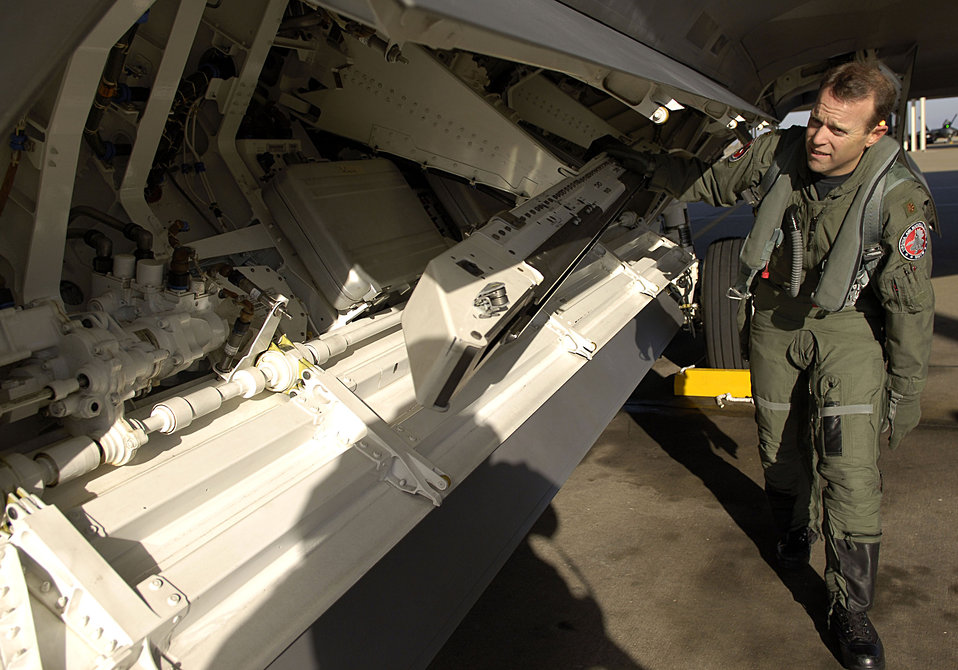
Raptors head to Red Flag

Maj. Patrick Deconcini performs a preflight inspection of an F-22 Raptor Feb. 3 at Langley Air Force Base in Virginia. The 94th Fighter Squadron is deploying for Red Flag at Nellis AFB, Nev. Red Flag is an air combat training exercise designed to test pilots and air support crews' ability to affectively respond to real-world combat scenarios. This is the first deployment to Red Flag for the 94th FS with F-22s. Major Deconcini is a 192nd Virginia Air National Guard pilot with the 94th Fighter Squadron.